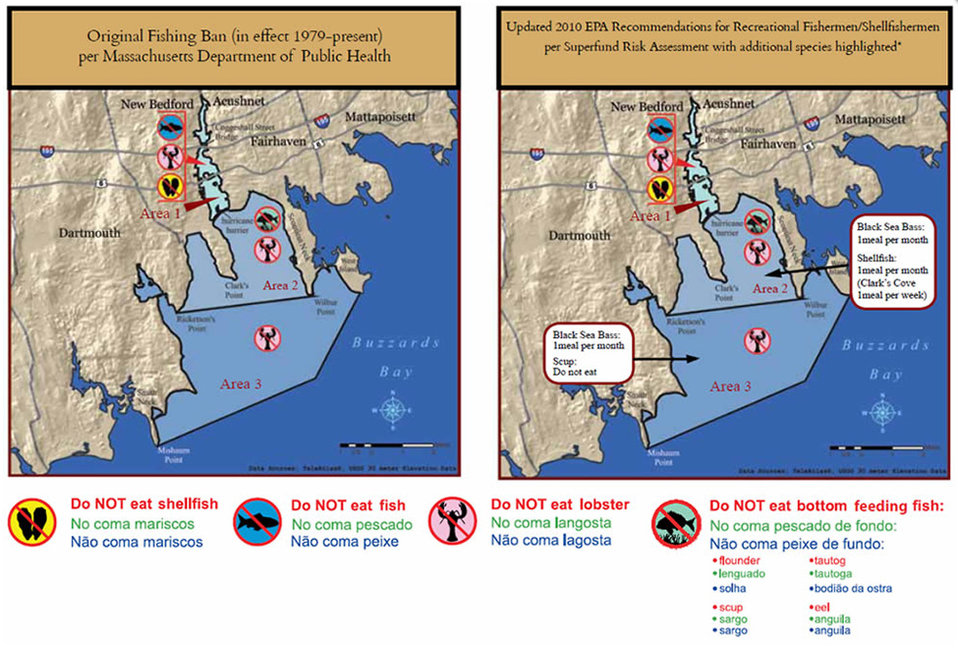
New Bedford Harbor Fish Consumption Limits, Massachusetts

Active fishing restrictions and local consumption advisories have been extended beyond the original bans of 1979. Signs along the harbor are periodically inspected and repaired as needed. If you see a sign that is in need of replacement or repair, please let us know at www.epa.gov/nbh